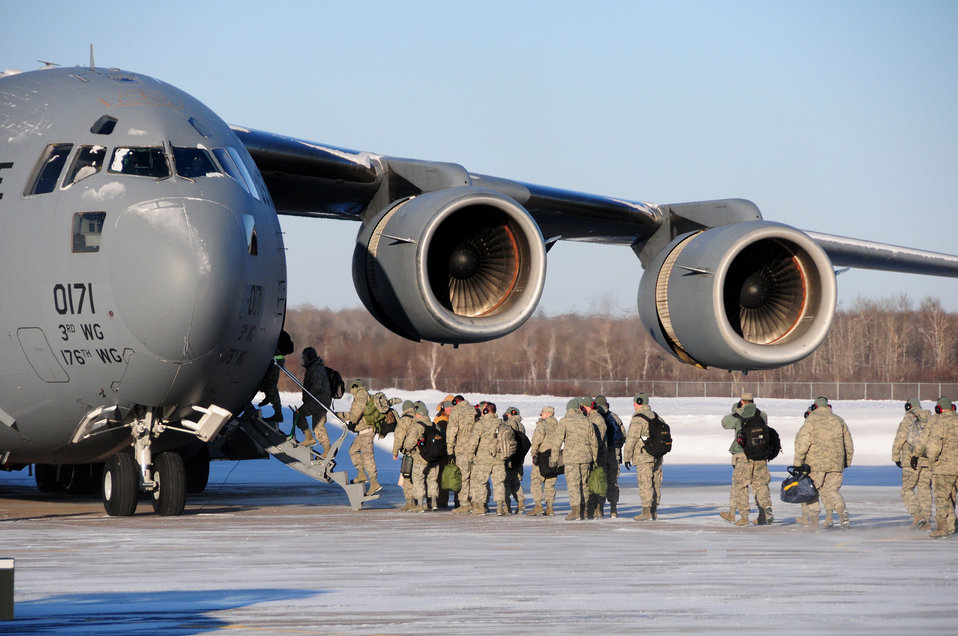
All aboard!

Service members from the Minnesota Air National Guard's 148th Fighter Wing board a C-17 Globemaster III Jan. 22, 2011, in Duluth, Minn. The C-17 is bound for training exercise Combat Archer, the first operational test of newly upgraded F-16 Fighting Falcons at Tyndall Air Force Base, Fla.